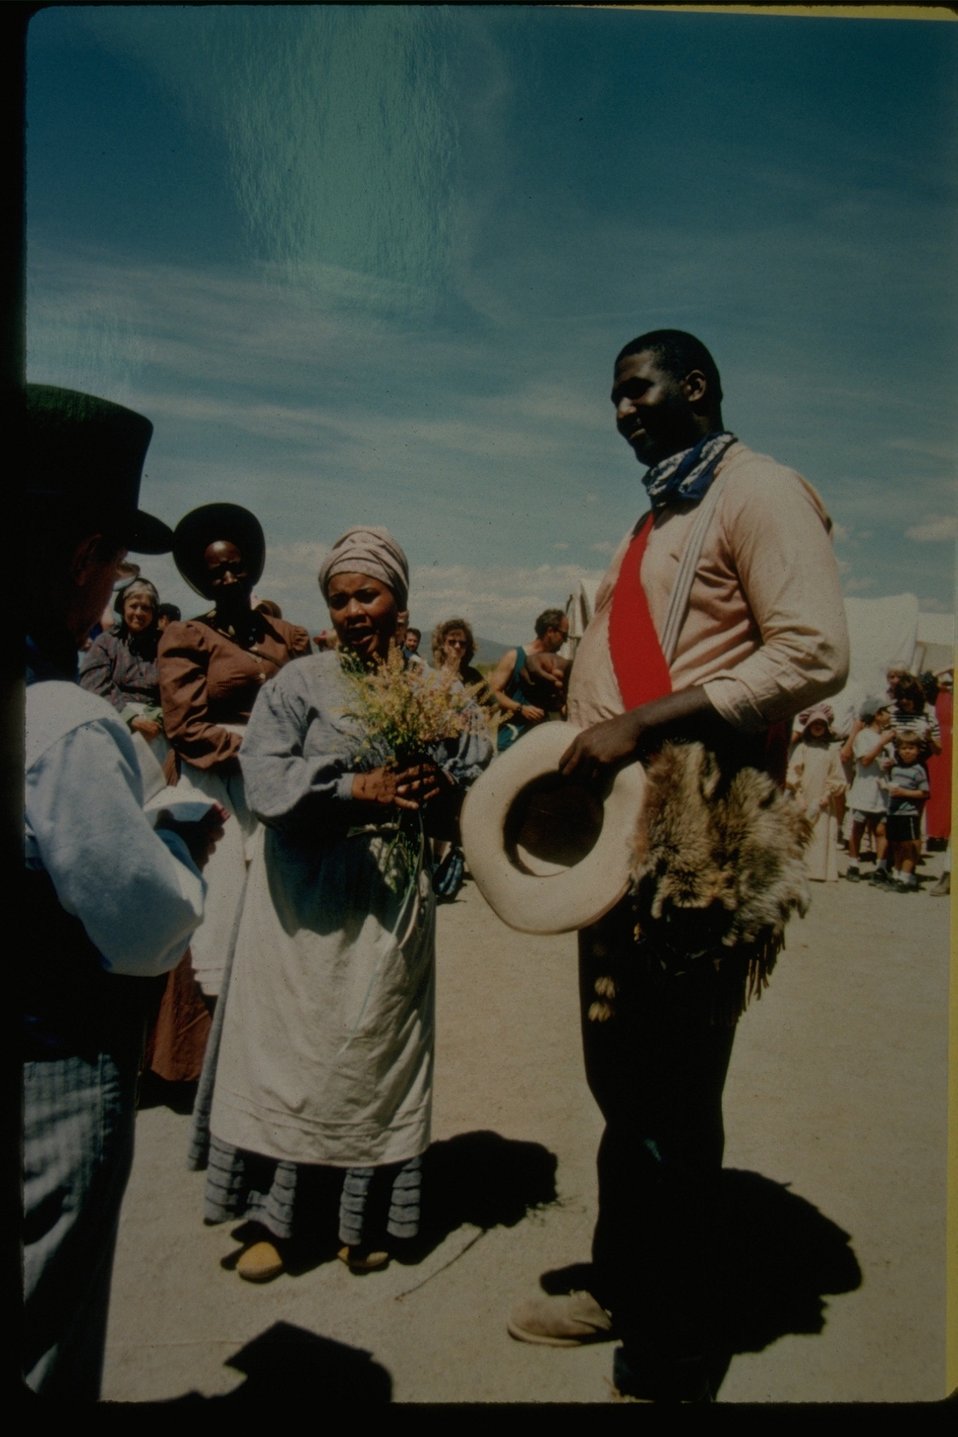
A wagon train wedding at the Pioneer Festival (NHOTIC).